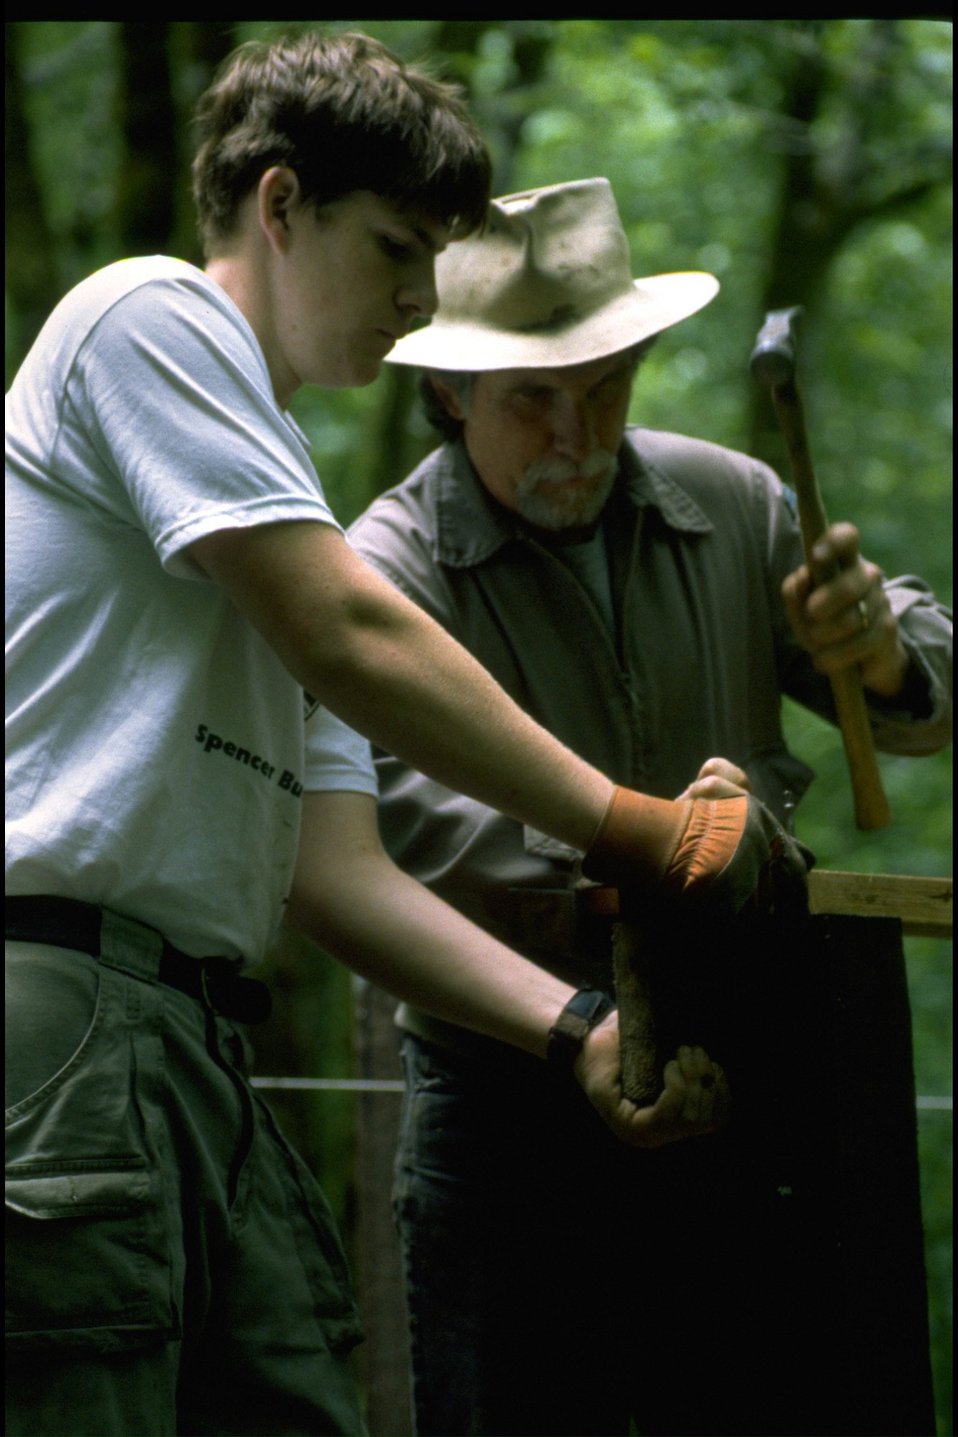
Clay Creek Bridge Project.